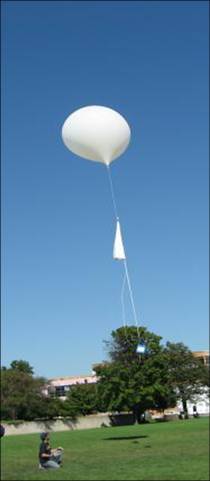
Habet Flight Stack